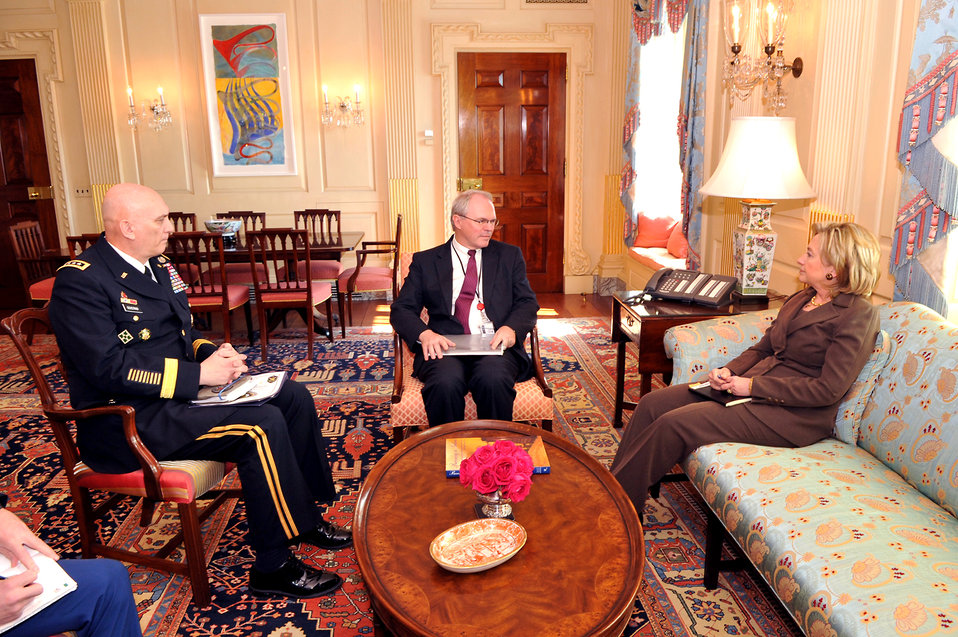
Secretary Clinton Meets With U.S. Ambassador to Iraq and Commanding General, Multi-National Force-Iraq

U.S. Secretary of State Hillary Rodham Clinton meets with U.S. Ambassador to Iraq Chris Hill and General Ray Odierno, Commanding General, Multi-National Force-Iraq, at the Department of State in Washington, DC February 19, 2010.